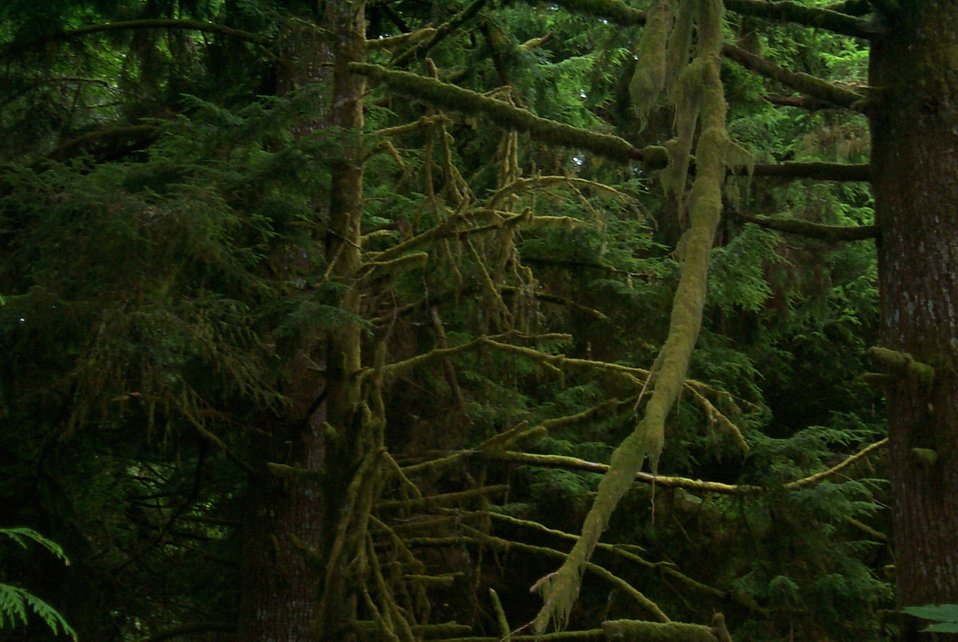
Moss covered trees along the Oregon coast.